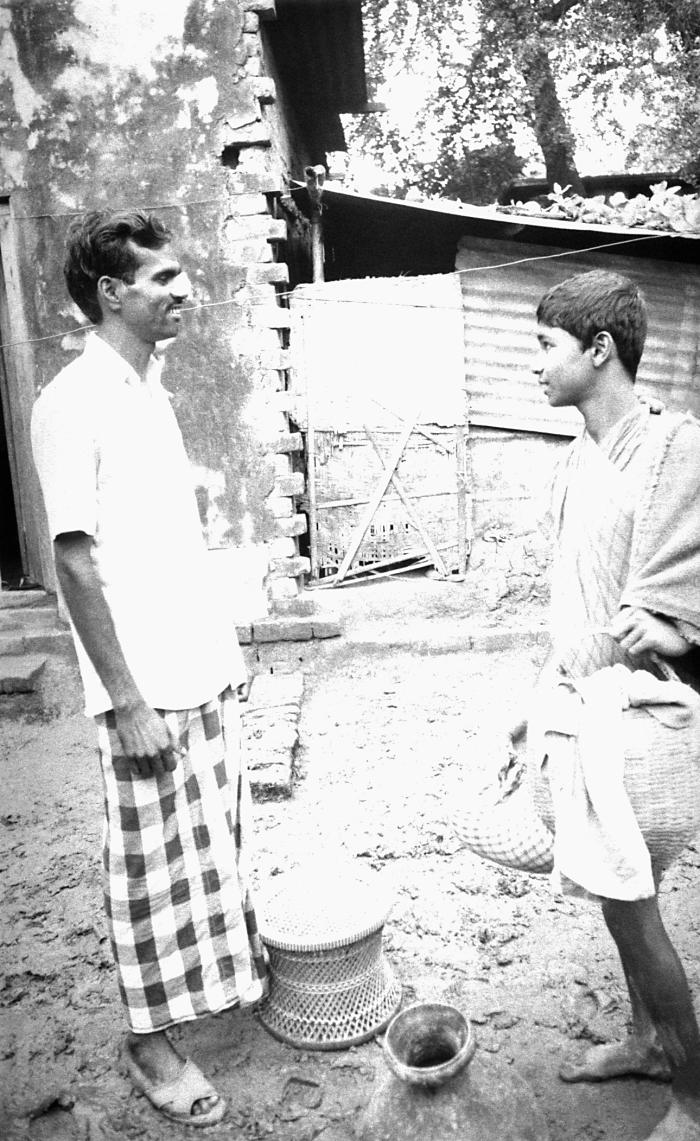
These two men, a householder on the left, who'd been standing guard at the entrance to a home with a known smallpox case, and an itinerant vendor on the right, were conversing on the street of a Bangladesh town. This image was part of a series provided by Dr. Stan Foster, and captured by Pierre Claquin, M.D., B.A.C., who at the time was a member of the World Health Organization's Smallpox Eradication Program. It was part of a series photographed by former E.I.S. officer, Stanley O. Foster M.D., M.P.H., and was one of a series entitled 'The Story of One Smallpox Jeep', which depicted the travails faced by the jeep, and its occupants of public health practitioners, as they road through the Bangladesh countryside in an attempt to eradicate smallpox from the country.